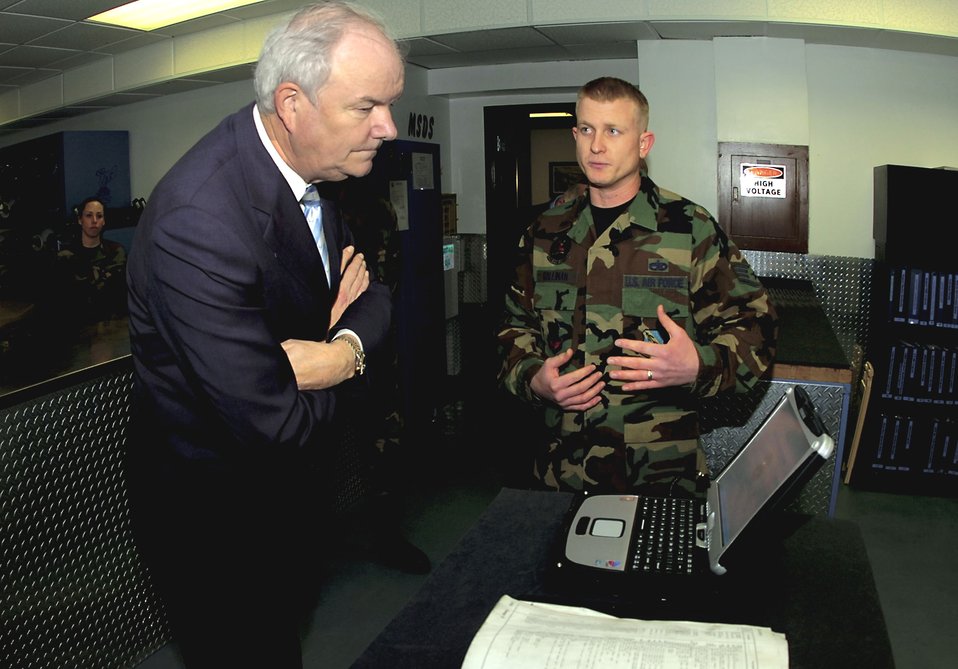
SECAF visits Seymour Johnson AFB

Staff Sgt. Ian Hallinan demonstrates the capabilities of the Interactive Electronic Technical Manuals system to Secretary of the Air Force Michael W. Wynne Jan. 19 during his visit to Seymour Johnson Air Force Base, N.C. Sergeant Hallinan is with the 334th Aircraft Maintenance Unit.